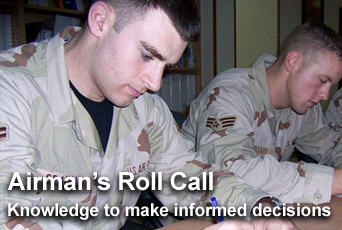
Airman's Roll Call highlights knowledge of benefits

This week's Airman's Roll Call focuses on Airmen having knowledge of pay and benefits to be better prepared to make decisions about their Air Force career.